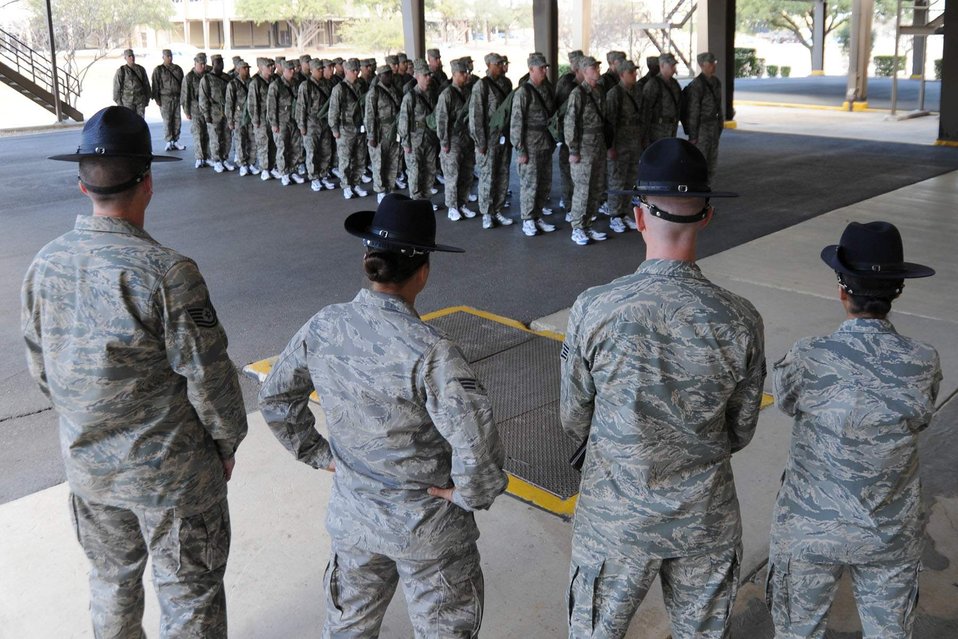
Basic training

Four military training instructors keep a close eye on a formation of new recruits at Lackland Air Force Base, Texas. Military training instructors now conduct an extended basic training program that runs eight-and-a-half weeks, two weeks longer than the previous program.